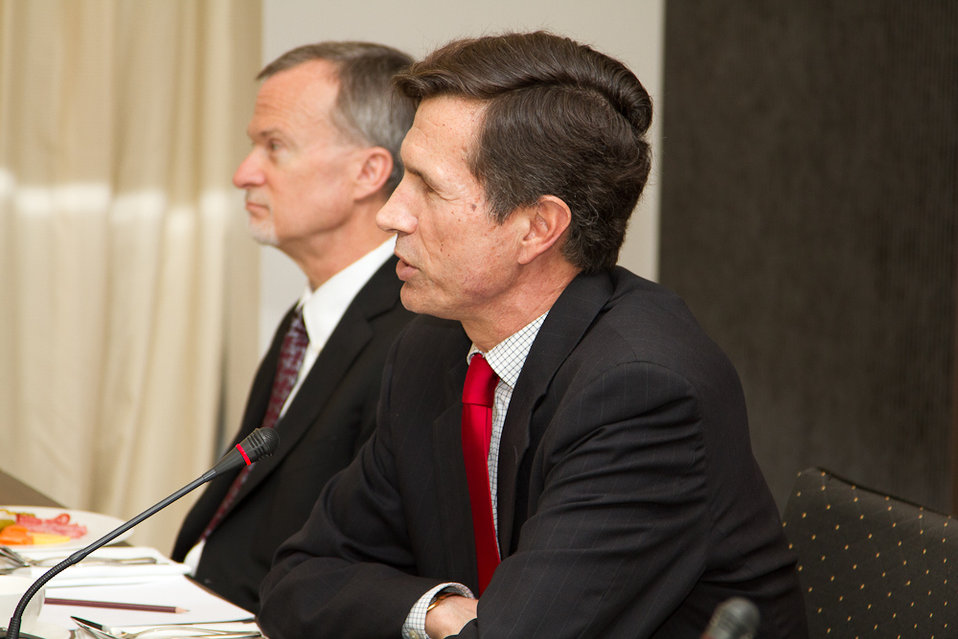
Assistant Secretary Blake Leads U.S. Government-Interagency Delegation to U.S.-Tajikistan Annual BIlateral Consultations

U.S. Assistant Secretary of State for South and Central Asian Affairs, Robert O. Blake, Jr. leads the U.S. government-interagency delegation to the second U.S. - Tajikistan Annual Bilateral Consultations in Dushanbe, Tajikistan, April 11 - 12, 2011. [Damian Wampler/ State Department photo/ Public Domain]